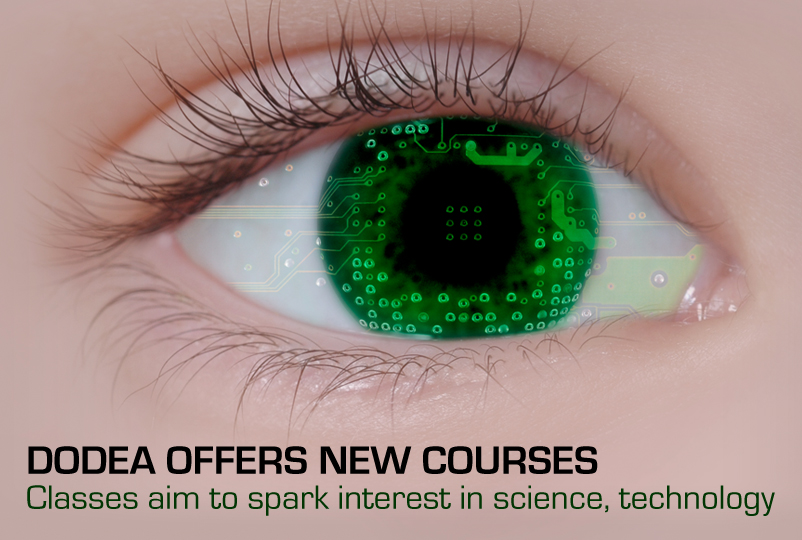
DODEA offers new courses